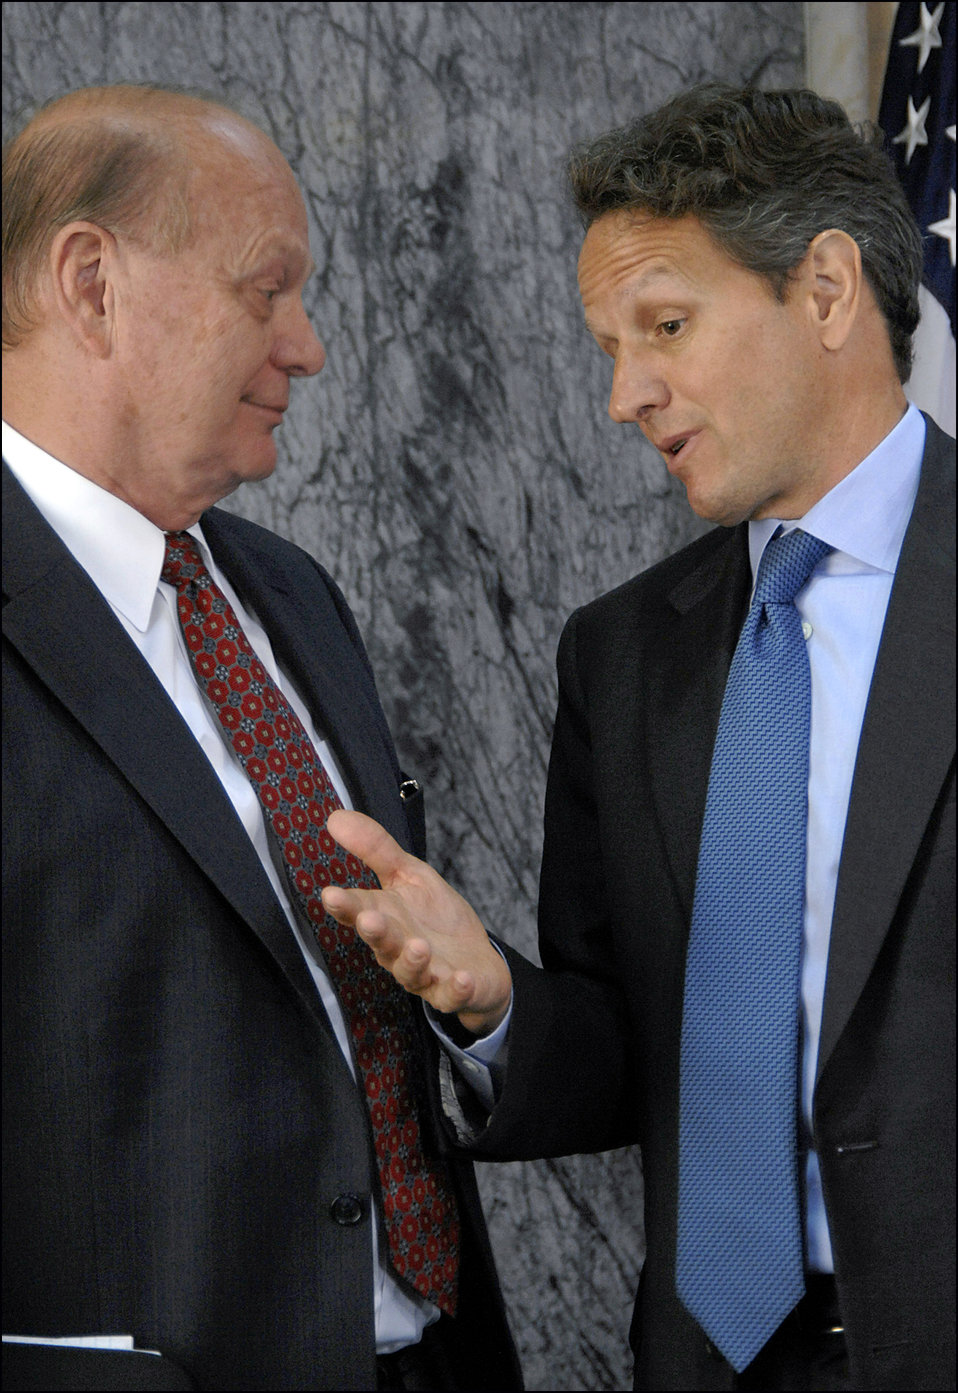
Conference on the Future of Housing Finance, 08/17/2010

Secretary Geithner with Alex Pollack of the American Enterprise Institute at the Conference on the Future of Housing Finance.